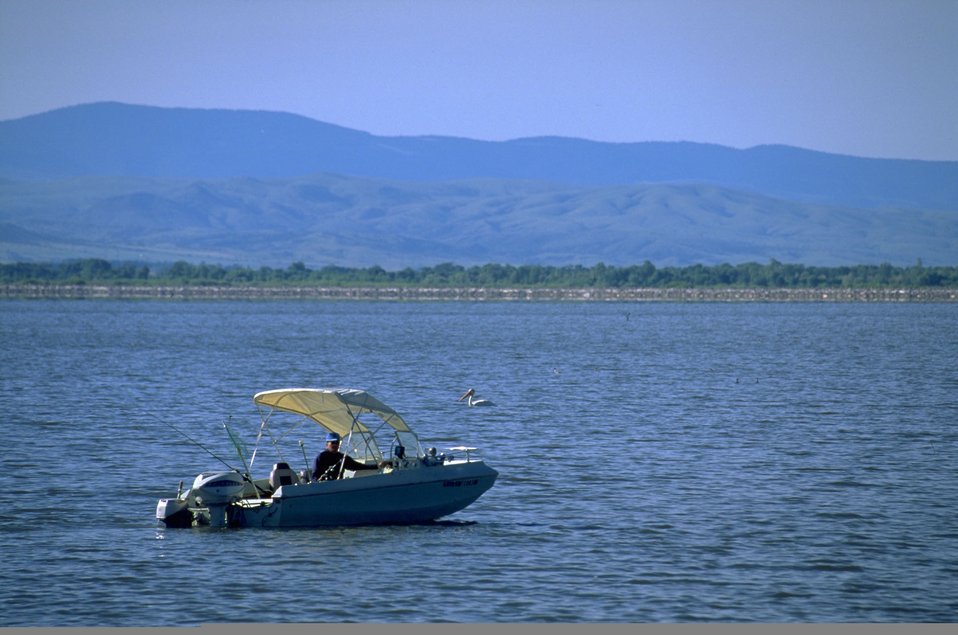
Powerboat on Canyon Ferry Lake